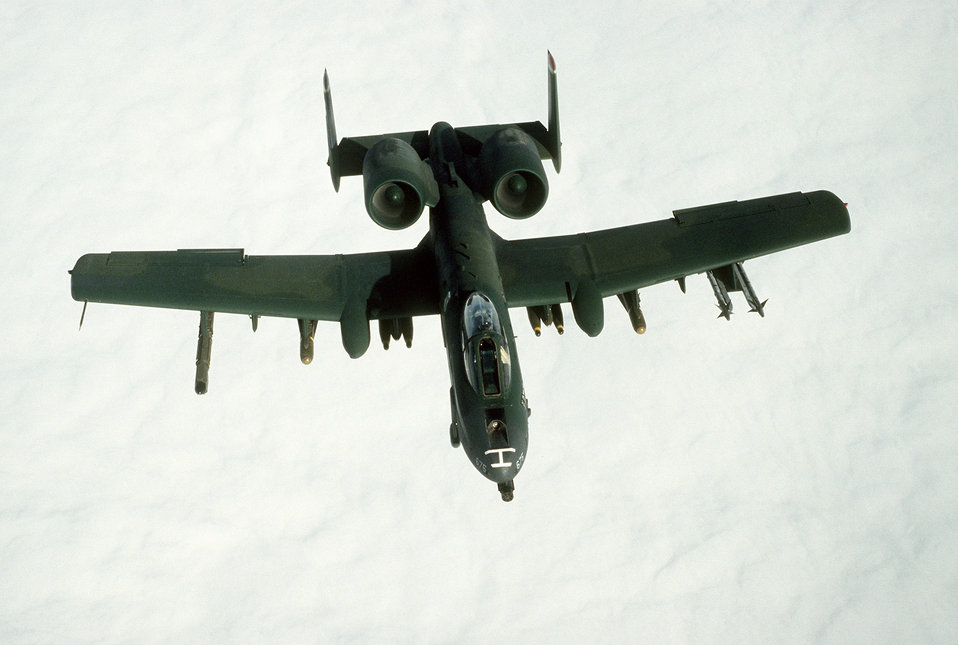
A-10A Thunderbolt II

1990's -- An A-10A Thunderbolt II aircraft takes part in a mission during Operation Desert Storm. The aircraft is armed with AIM-9 Sidewinder missiles, AGM-65 Maverick missiles, and Mark 82 500-pound bombs.